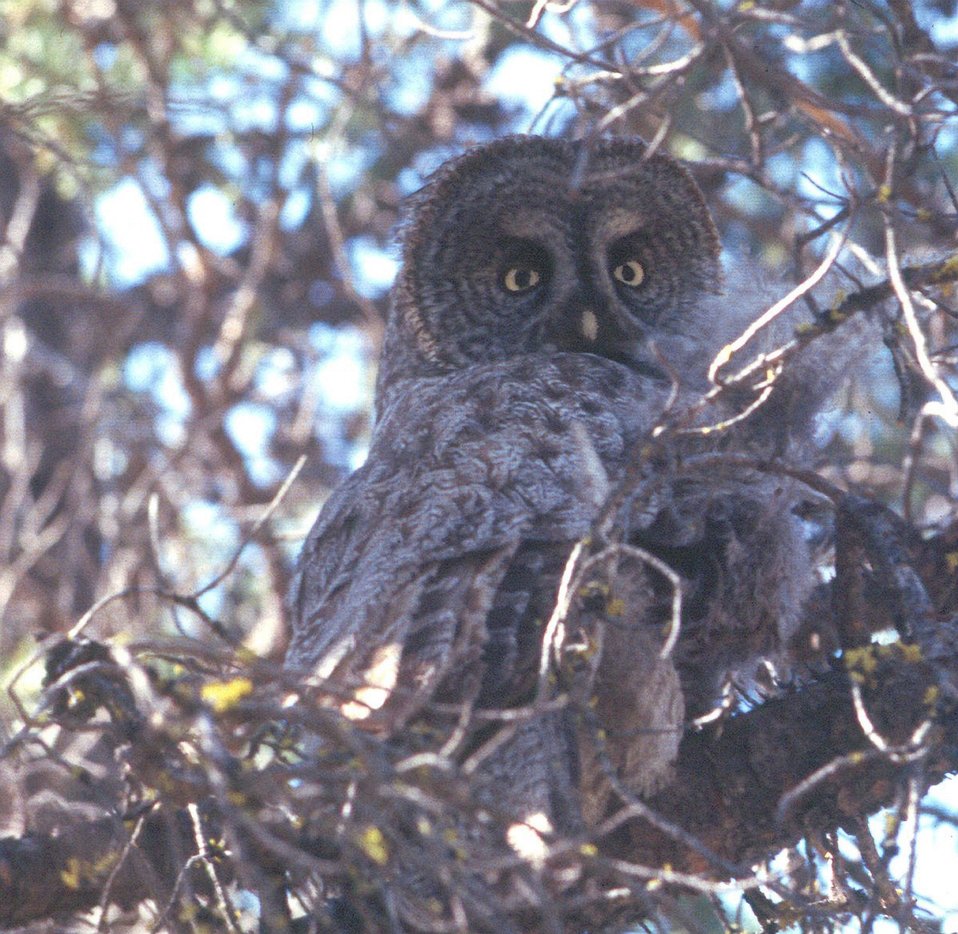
Great Gray Owl (Strix nebulosa) near the Sun River Area on the Deshcutes National Forest in eastern Oregon.